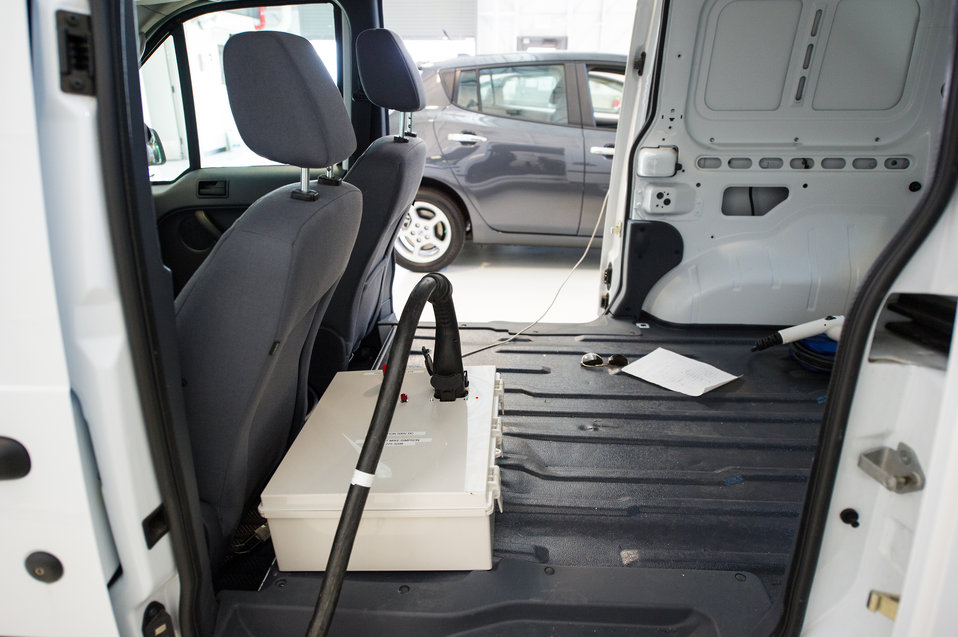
VTIF Research

July 26, 2013 - Battery in Ford Transit Connect used in an experiment at the Vehicle Testing and Integration Facility (VTIF), maximizing solar power generation for the fast charging of an electric vehicle (Gray Nissan Leaf) from a solar PV source. The battery in the Ford Transit (white van) acts as a stationary battery, simulating the utility grid load and providing additional power or storing excess power as needed to charge the EV.